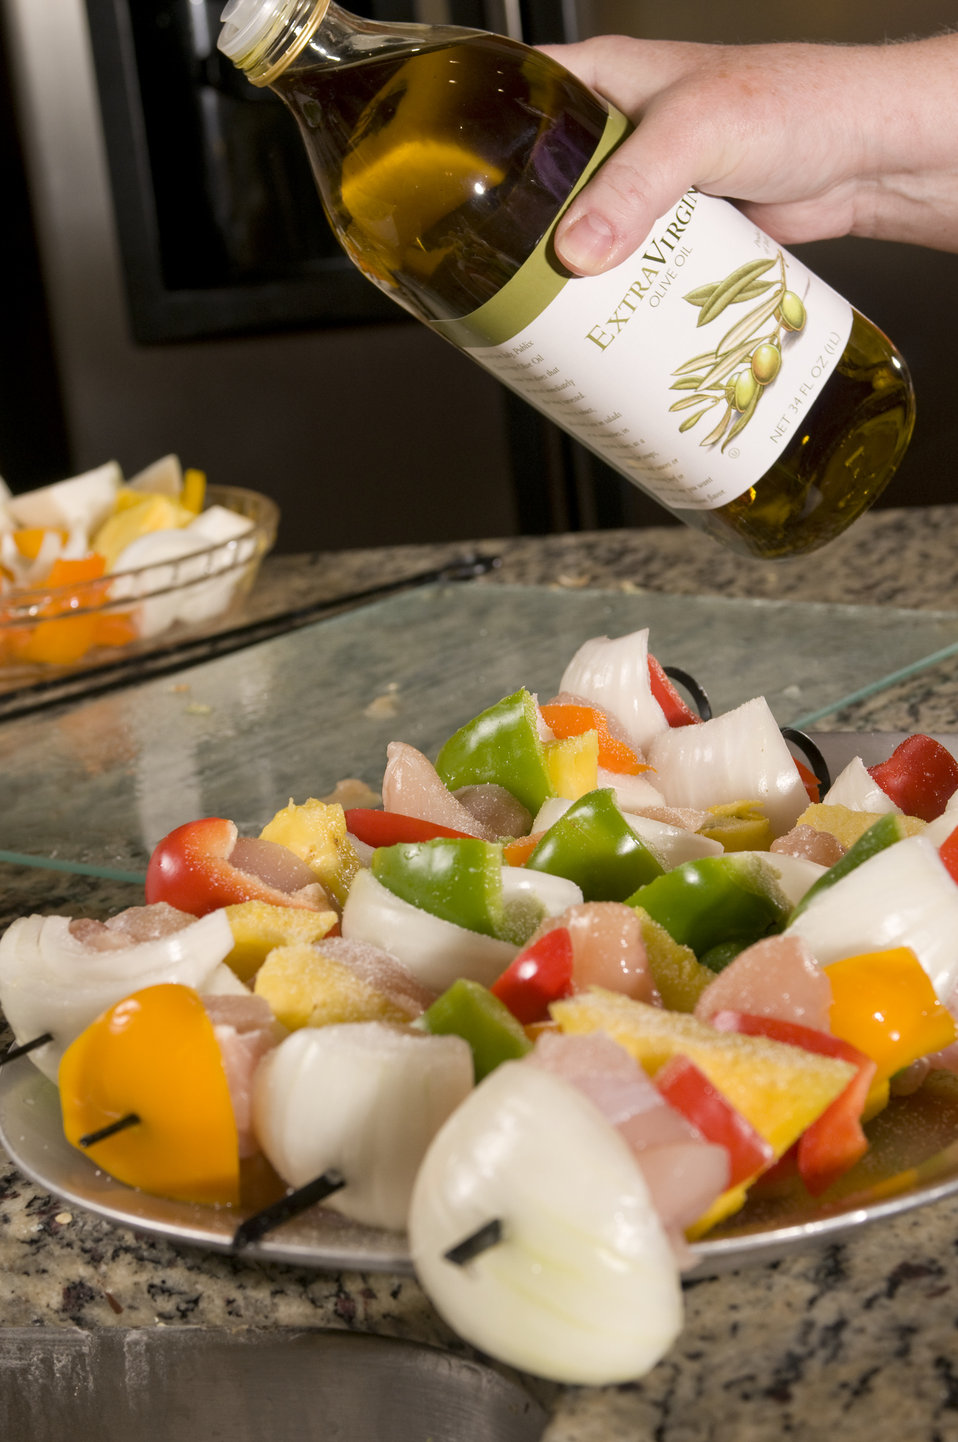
At this point in the food preparation process, this cook had assembled four kabobs consisting of various-colored bell peppers, pieces of sweet onion, chunks of deboned chicken breast meat, and pieces of fresh cut pineapple. We can see the cook about to add some extra virgin olive oil to the skewers prior to thoroughly cooking this food.